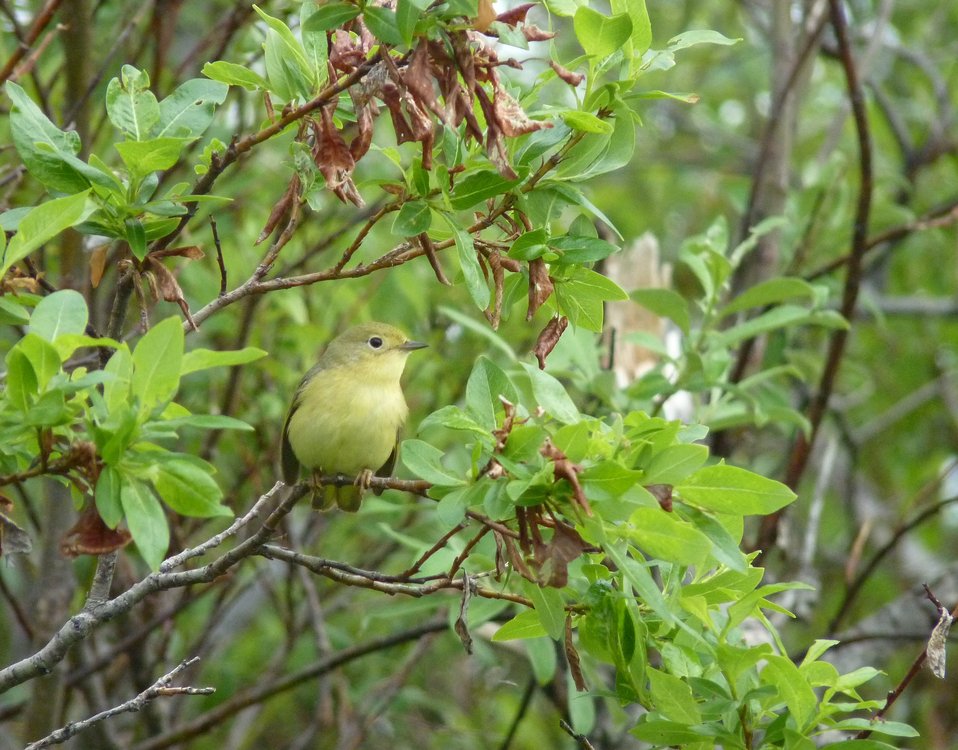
Yellow Warbler female

Andreafsky wilderness, Yukon Delta National Wildlife Refuge